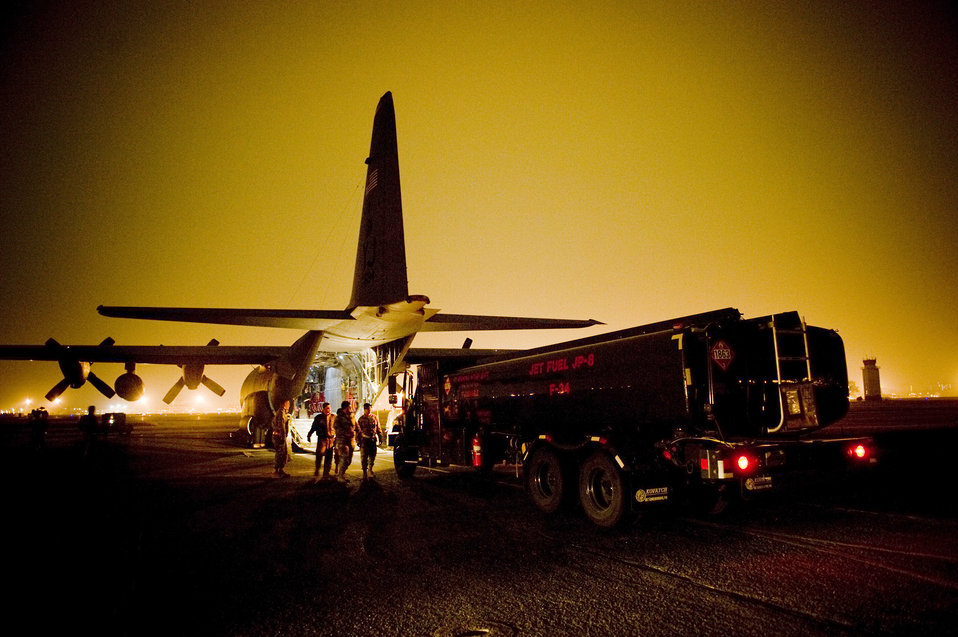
Yokota AB Airmen deliver fuels truck to aid Japan's relief efforts

A fuels truck pulls up to an C-130H Hercules to be loaded here March 15. The fuels truck was taken to Yamagota Airport to support Japan's earthquake and tsunami relief efforts.